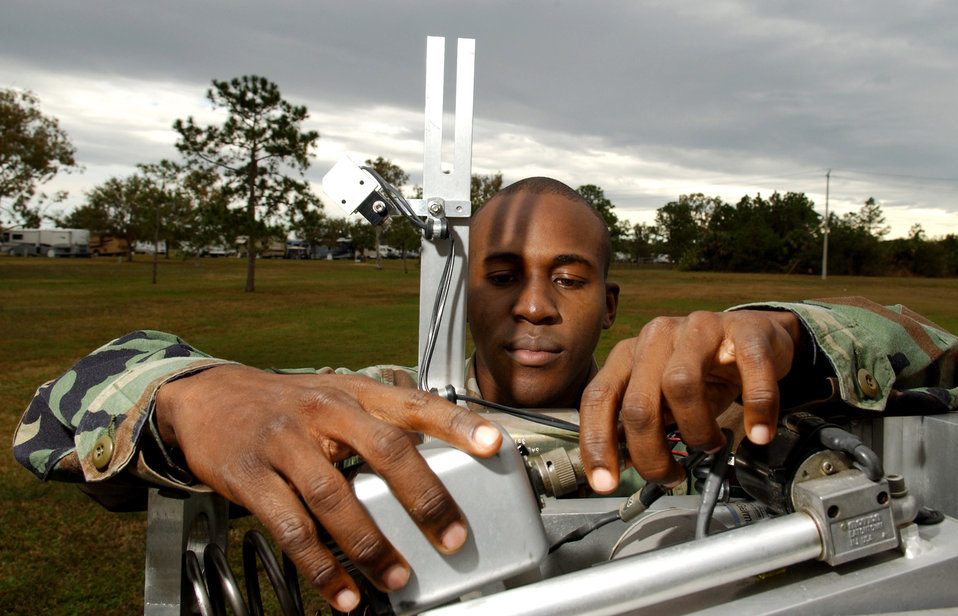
Robot work

MACDILL AIR FORCE BASE, Fla. (AFPN) -- Senior Airman Wayne Howell does a preventive maintenance inspection here on the fiber optic cables of a remote operated neutralization system, or RONS, Jan. 30. The fiber optic cables connect to the cameras on the RONS, which is used to retrieve explosive devices. Airman Howell is an explosive ordnance disposal technician with the 6th Civil Engineer Squadron.